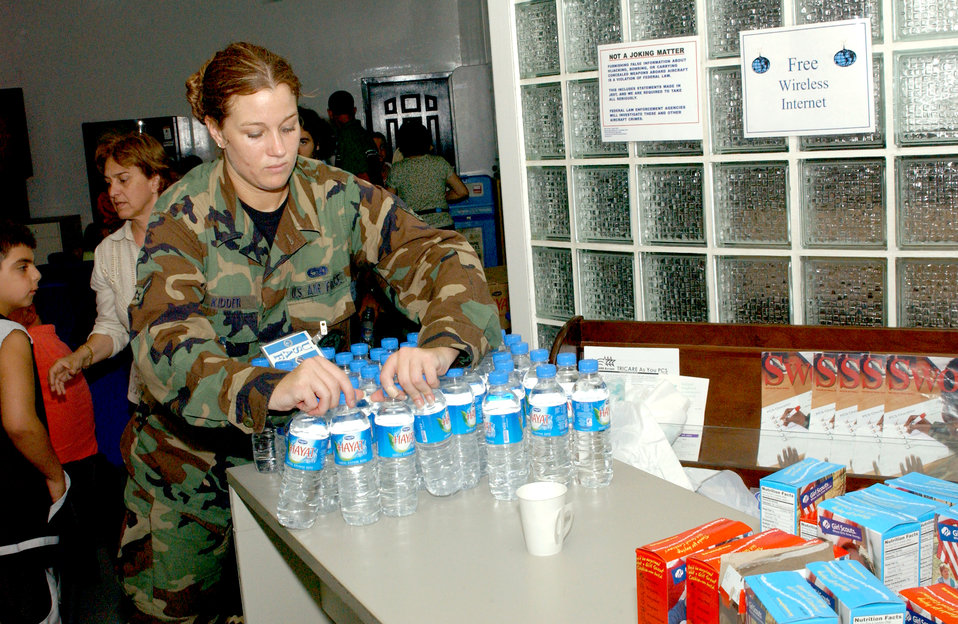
Incirlik pulls together as hundreds transit base

Airman 1st Class Kara Kidder sets out water in the passenger terminal at Incirlik Air Base, Turkey, on July 25. She was assisting American citizens who had stopped at Incirlik on their way to the United States. Airman Kidder is with the 728th Air Mobility Squadron.